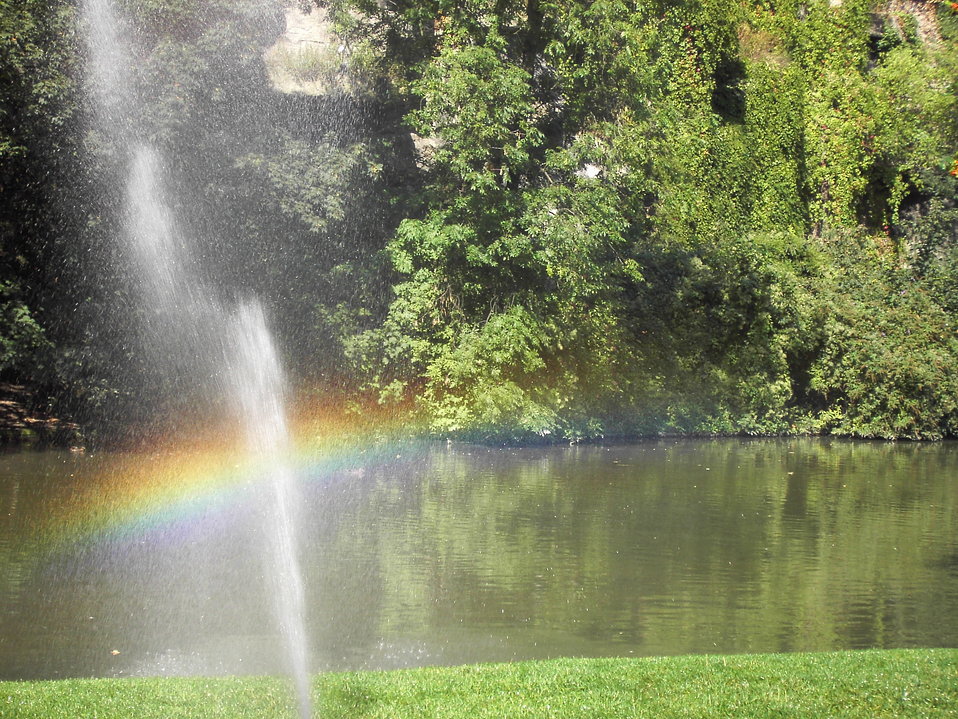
Italiano: arcobaleno da giardino (Paris, Buttes-Chaumont) Fran√ßais†: Jet d'eau iris√© (Paris, Buttes-Chaumont)